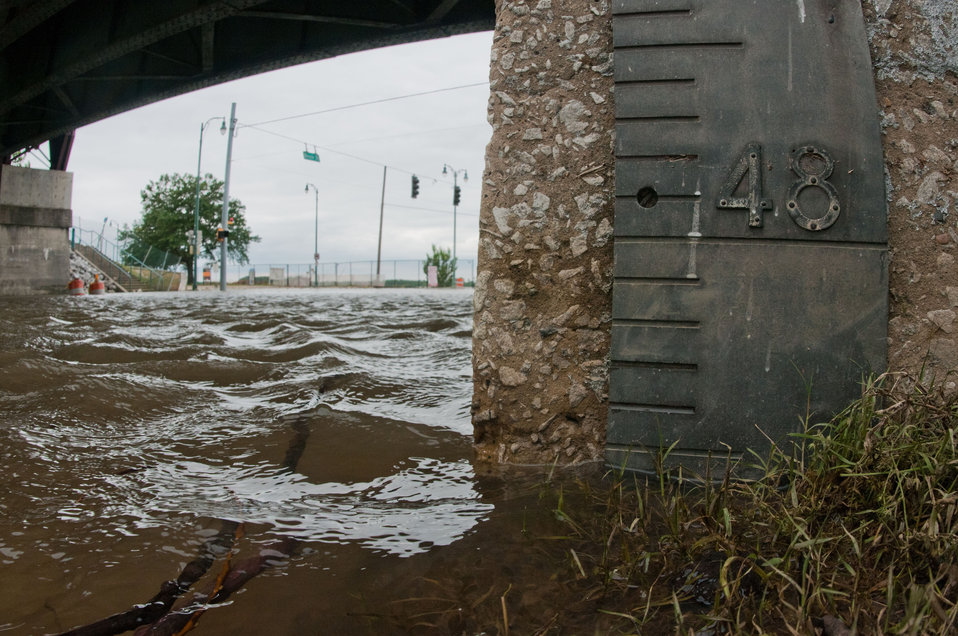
The gauge for flood level reference for the Mississippi River ion the Waterfront Trolley Bridge that spans historic Beale Street in Memphis, TN, on Saturday, May 14. 2011. At this time it indicates slightly less than 47 and 1/2 feet.